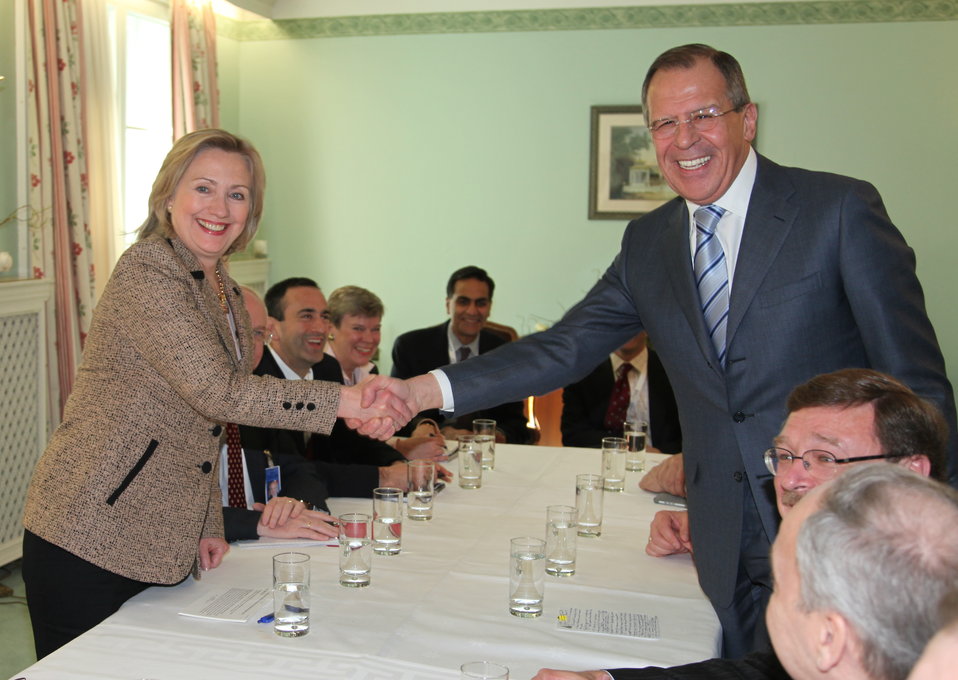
Secretary Clinton and Russian Foreign Minister Lavrov Shake Hands

U.S. Secretary of State Hillary Rodham Clinton and Russian Foreign Minister Lavrov shake hands after signing the New START Treaty at the Munich Security Conference in Munich, Germany, on February 5, 2011.